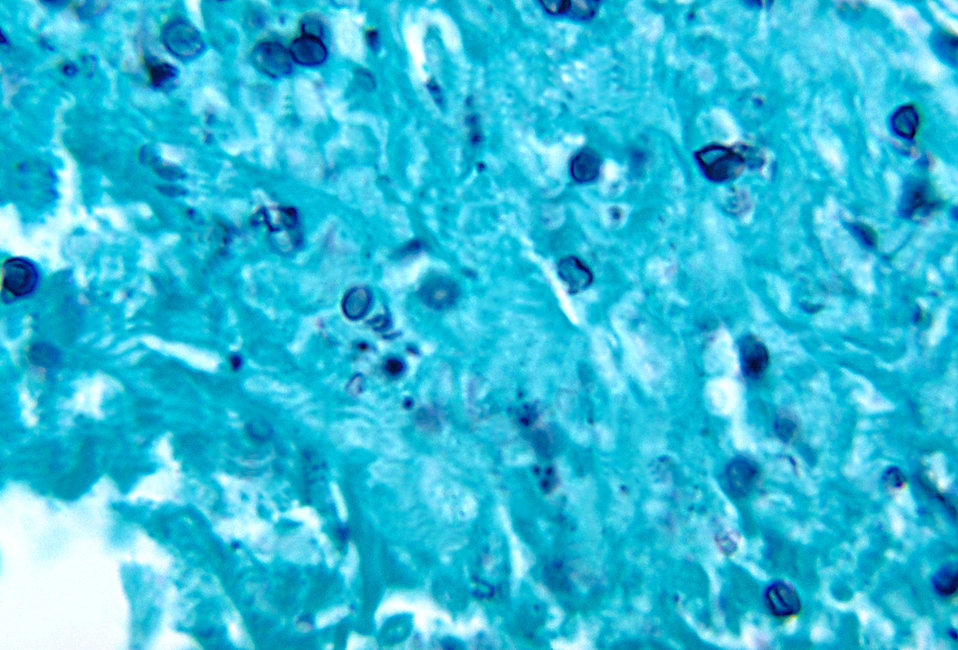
Note the histopathologic changes seen in histoplasmosis due to Histoplasma capsulatum using methenamine silver stain.